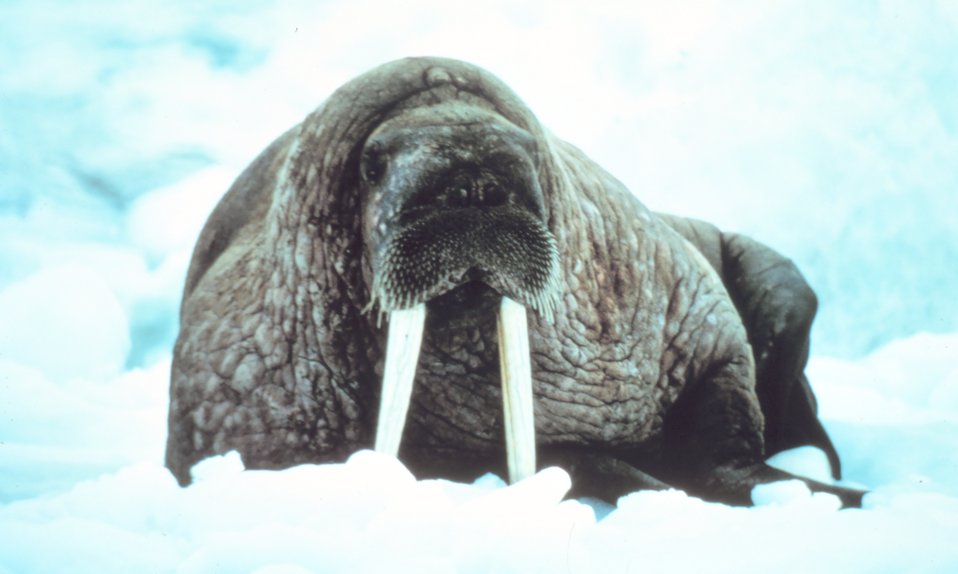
Large walrus on the ice - Odobenus rosmarus divergens - contemplating the photographer.